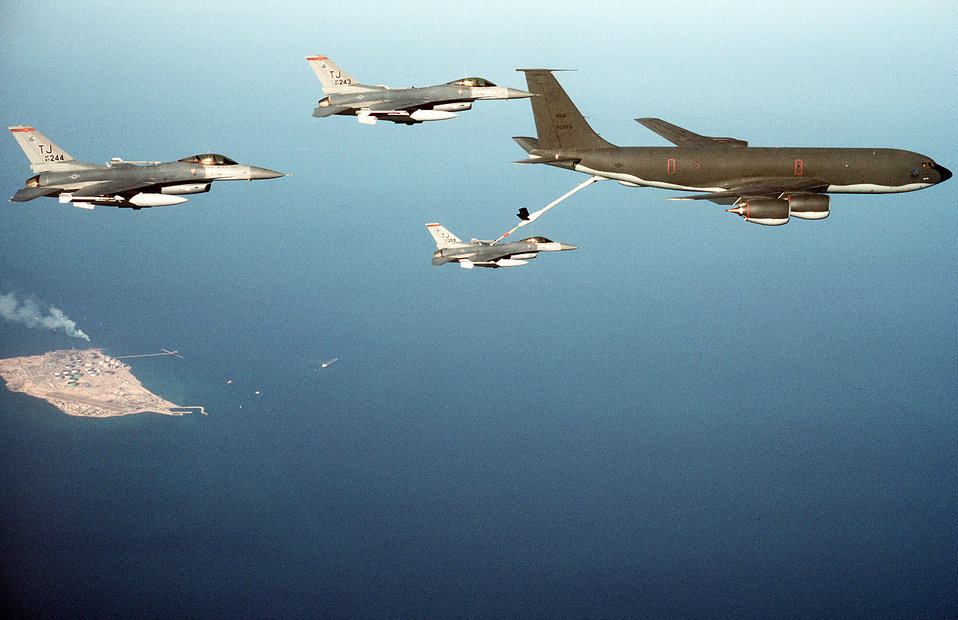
KC-135R Stratotanker

1990's -- A KC-135R Stratotanker refuels an F-16C Fighting Falcon fighter aircraft from the 614th Tactical Fighter Squadron , 401st Tactical Fighter Wing of Torrejon Air Base, Spain, as two other Fighting Falcons from the 614th TFS fly alongside during Operation Desert Shield.